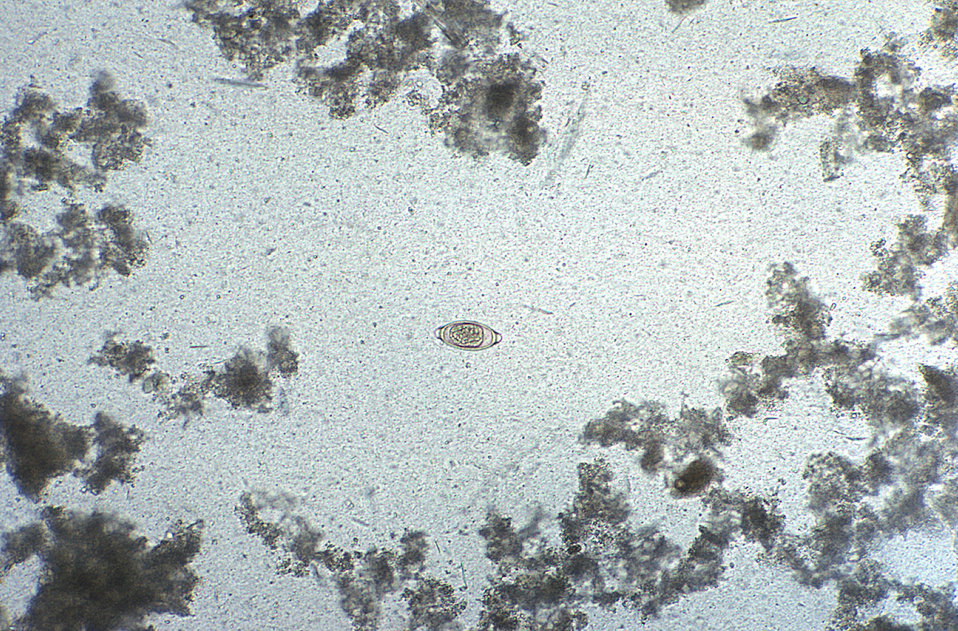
Magnified 128X, this photomicrograph revealed some of the ultrastructural features displayed by a Trichuris trichiura egg. The nematode, or roundworm, is also called the human whipworm. T. trichiura eggs are 50�m-55�m by 20�m-25�m. As is exemplified by this specimen, eggs are football-shaped, thick-shelled, and possess a pair of polar 'plugs' at each end. Eggs are passed unembryonated in stool.